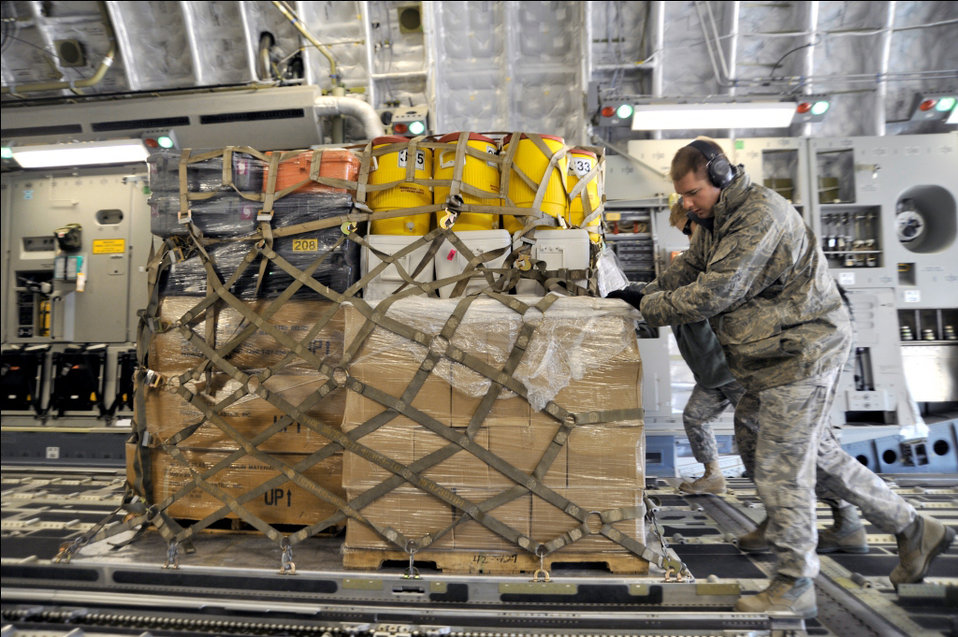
Mobility Airmen

Airmen from the 89th Aerial Port Squadron load pallets onto a C-17 Globemaster III March 12, 2011, at Joint Base Andrews, Md. Air transportation Airmen prepared 14 pallets of technical search-and-rescue gear, including inflatable swift-water rescue boats, generators, trench rescue and cutting equipment. The gear is being transported by C-17 to provide assistance after an earthquake and tsunami hit Japan March 11, 2011.